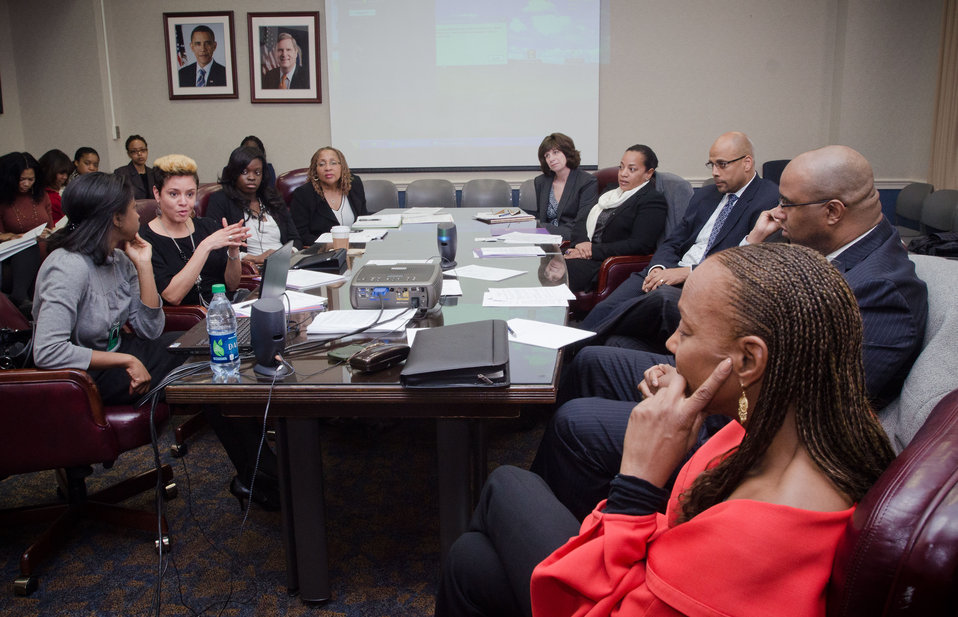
Virginia State University School of Agriculture Interim Dean Jewel E. Hairston, Ph.D. (second from left at table), made comments to National CARES Mentoring Movement founder and Editor-in-Chief Emeritus, Essence magazine, Susan Taylor (right, in red), while at the Department of Agriculture in Washington, D.C., on Tuesday, February 28, 2012. CARES is a not-for-profit organization dedicated to recruiting and connecting mentors with local youth-serving and mentoring organizations to help guide under-resourced children to academic and social success across the country.
This discussion provides a continuation of the White House Policy in Action conference that took place in November. The focus of the discussion was about how existing federal programs and Administration priorities can be leveraged with her organization, especially as it relates to science, technology, engineering and mathematics (STEM) literacy, education and rural youth.